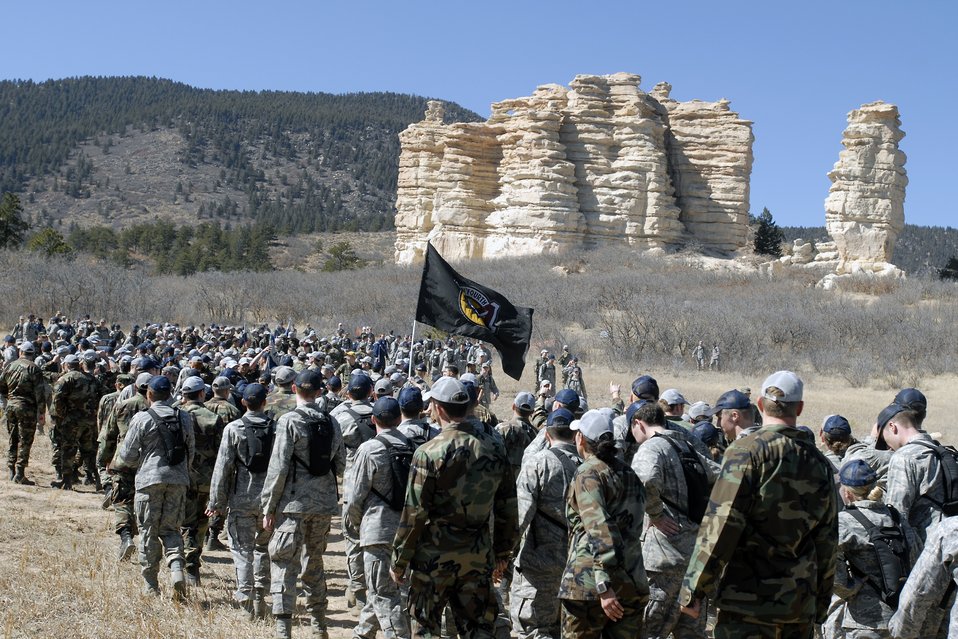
US Air Force Academy, CO

Fourth-class cadets arrive at Cathedral Rock during Recognitions